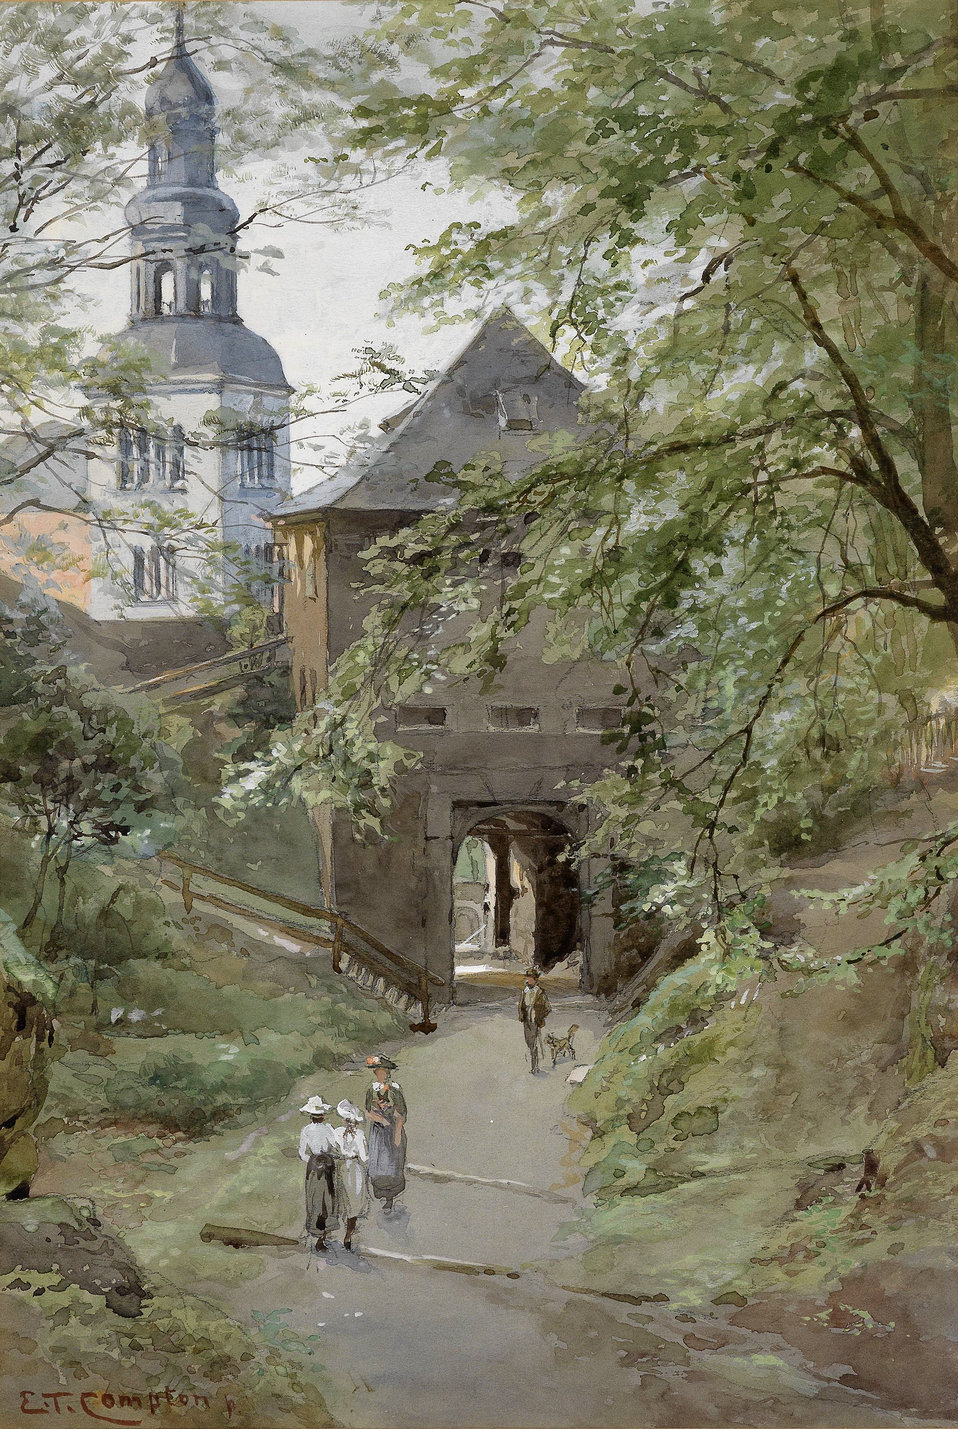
Das Augustiner Bräu und Kloster Mülln in Salzburg, signiert E. T. Compton p., Aquarell und Deckweiß auf Papier, 24,5 x 35,5 cm